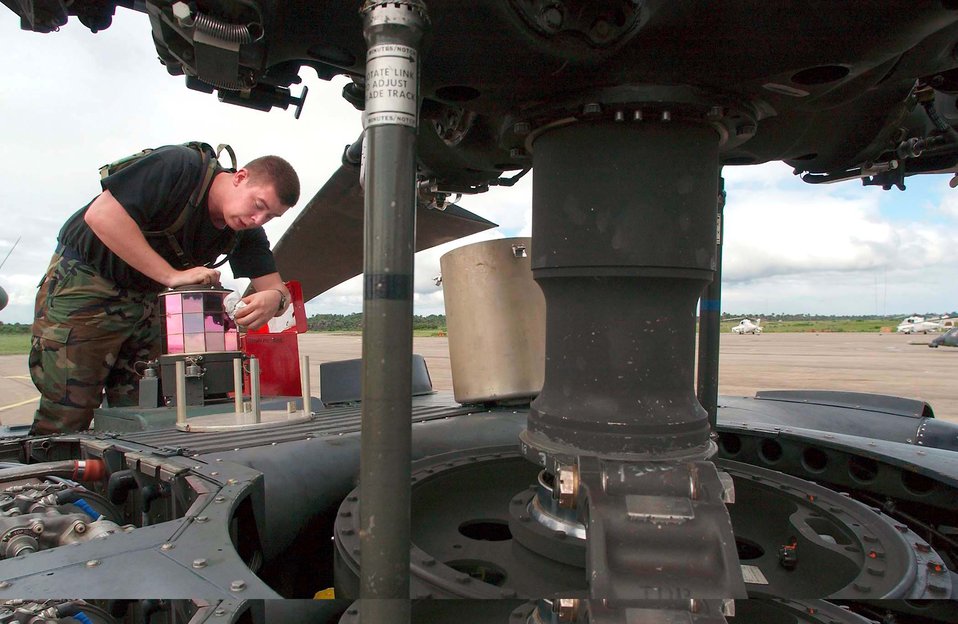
Electronic tune-up

LUNGI, Sierra Leone -- Senior Airman Christopher Burch repairs and cleans an ALQ-144 countermeasures set on an HH-60G Pave Hawk helicopter here. Burch is an electronics-warfare technician deployed from the 85th Maintenance Squadron at Naval Air Station Keflavik, Iceland.